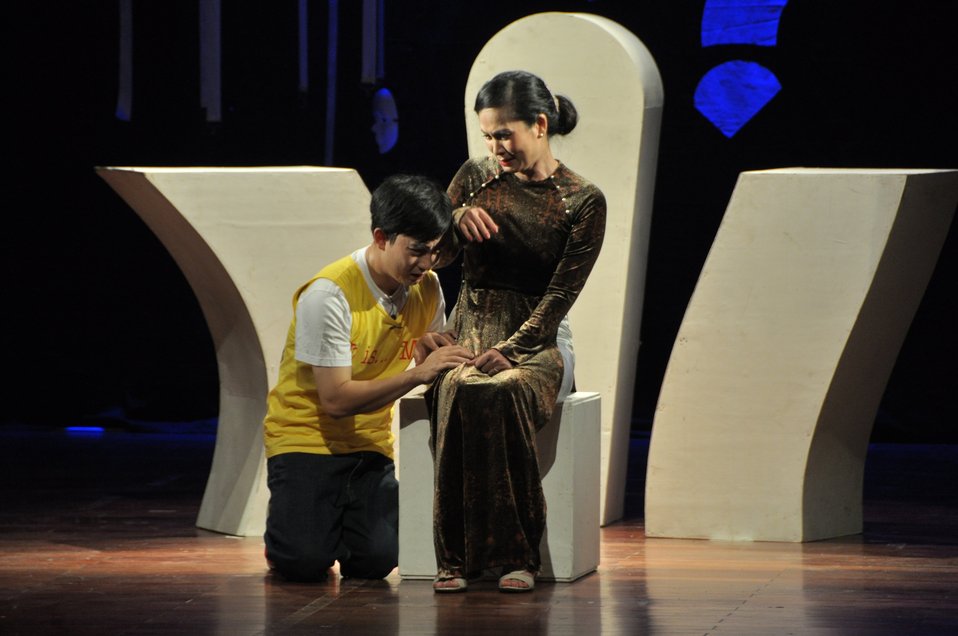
PEPFAR Musical Questions and Exclamations

Hanoi, May 17, 2013